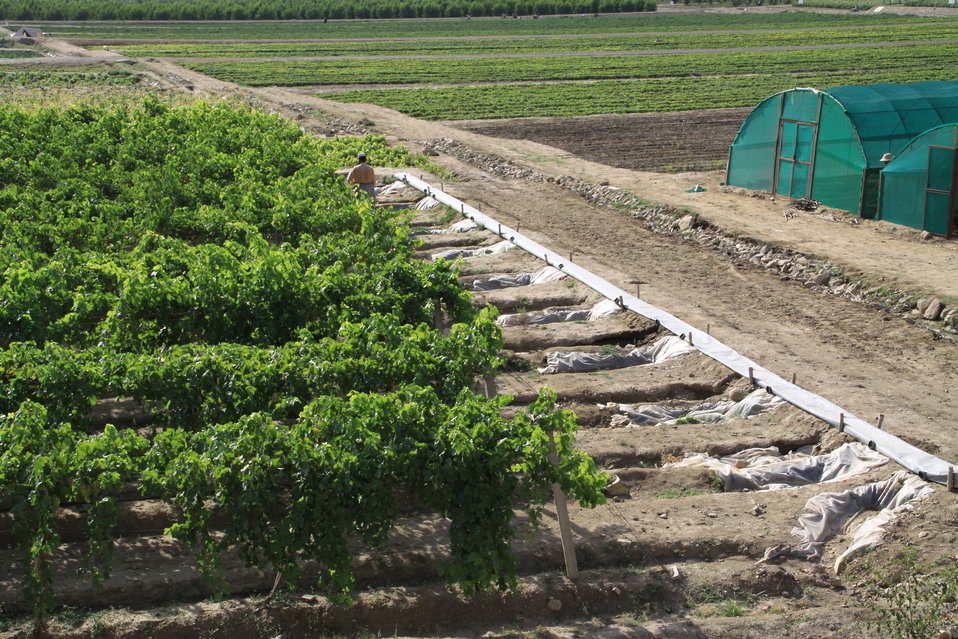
Badam Bagh Farm